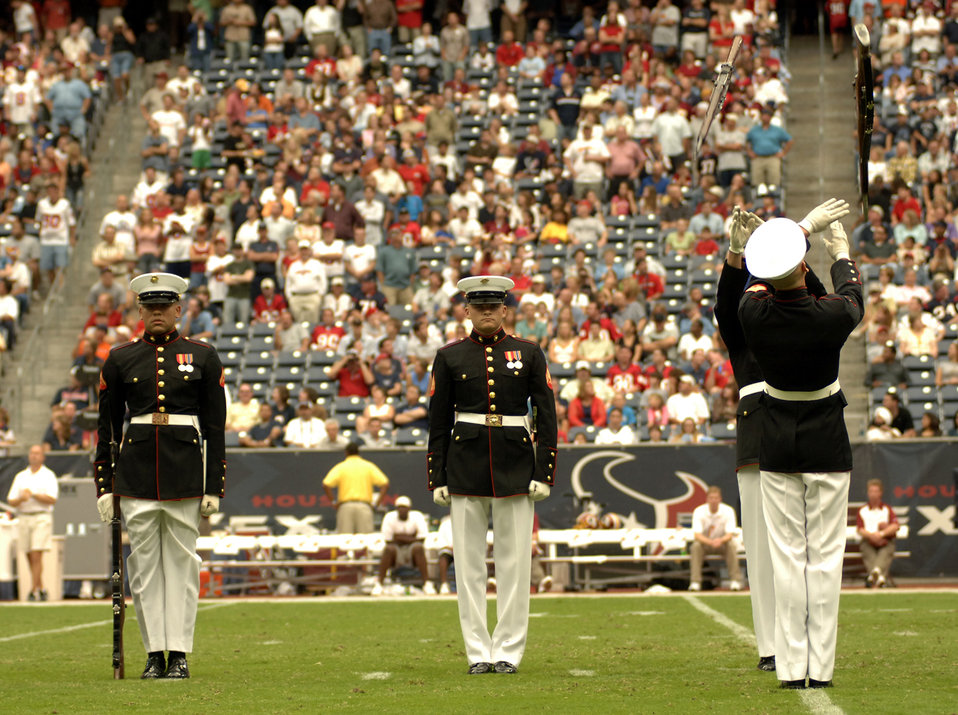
The Texans honored military servicemembers in their Salute to the Military day

The Marine Corps Silent Drill Team from Washington, D.C., performs in front of more than 70,000 fans at Reliant Stadium in Houston at halftime of the Houston Texans and Washington Redskins National Football League game Sept. 24. The Texans honored military servicemembers in their Salute to the Military day.